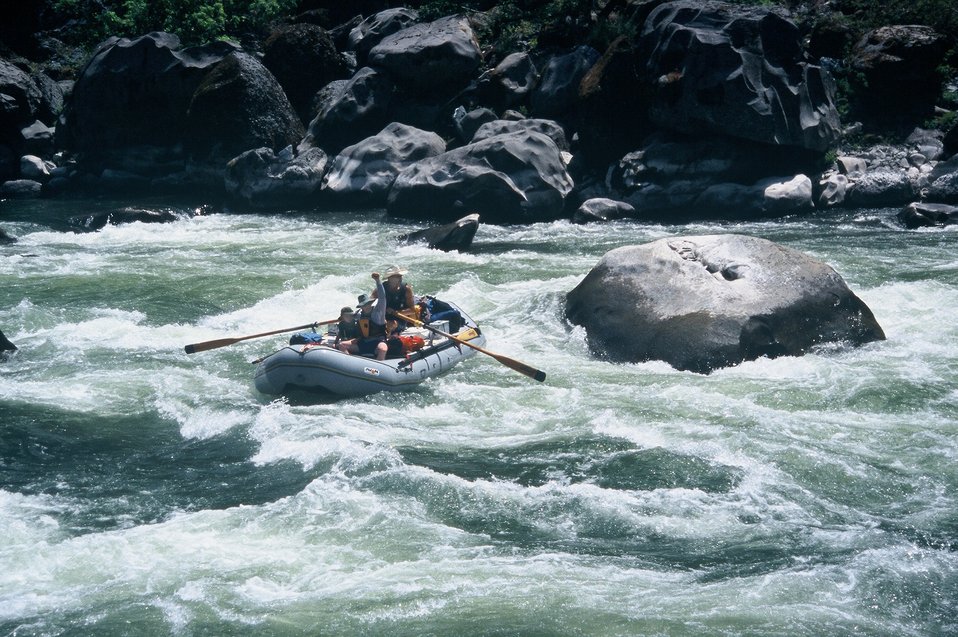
Wild section of the Rogue River from Grave Creek to Foster Bar May 19 to May 22.